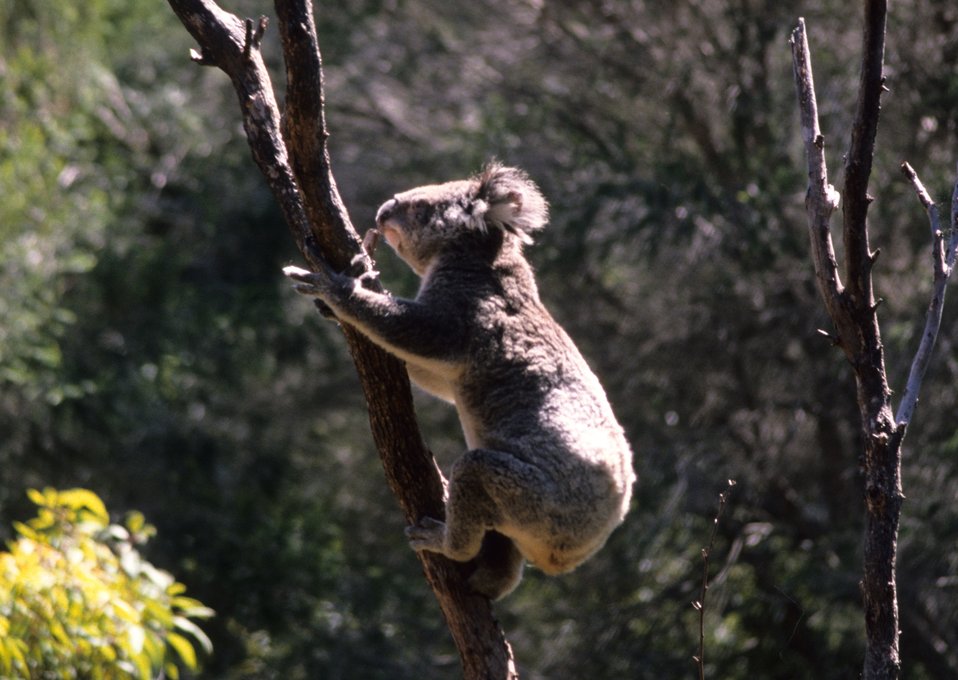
Koala bear (Phascolarctos cinereus), not a bear but an herbivorous marsupial.